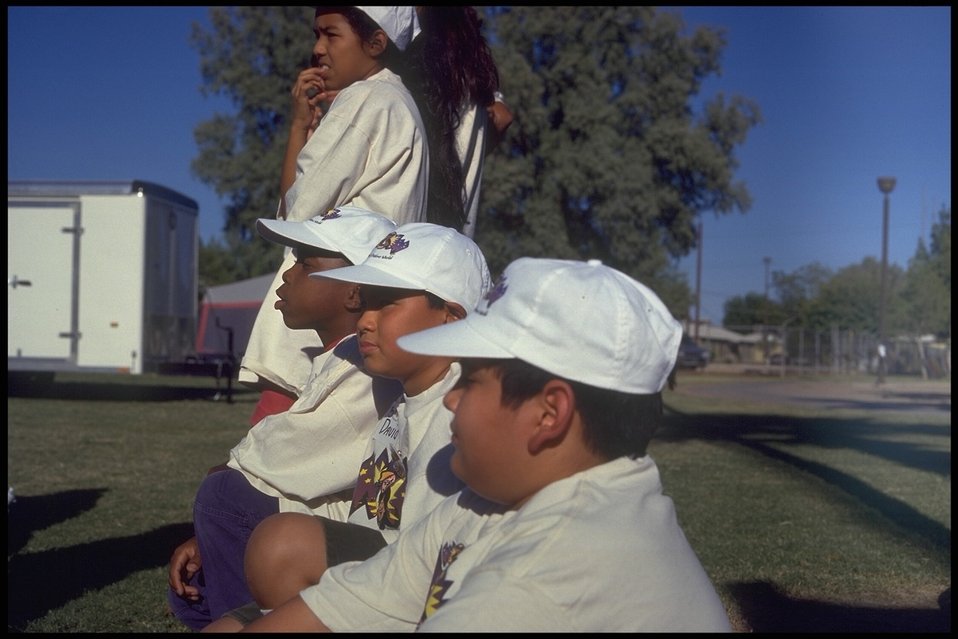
Beautiful Arizona sky hangs over a canyon in the Aqua Fria National Monument.